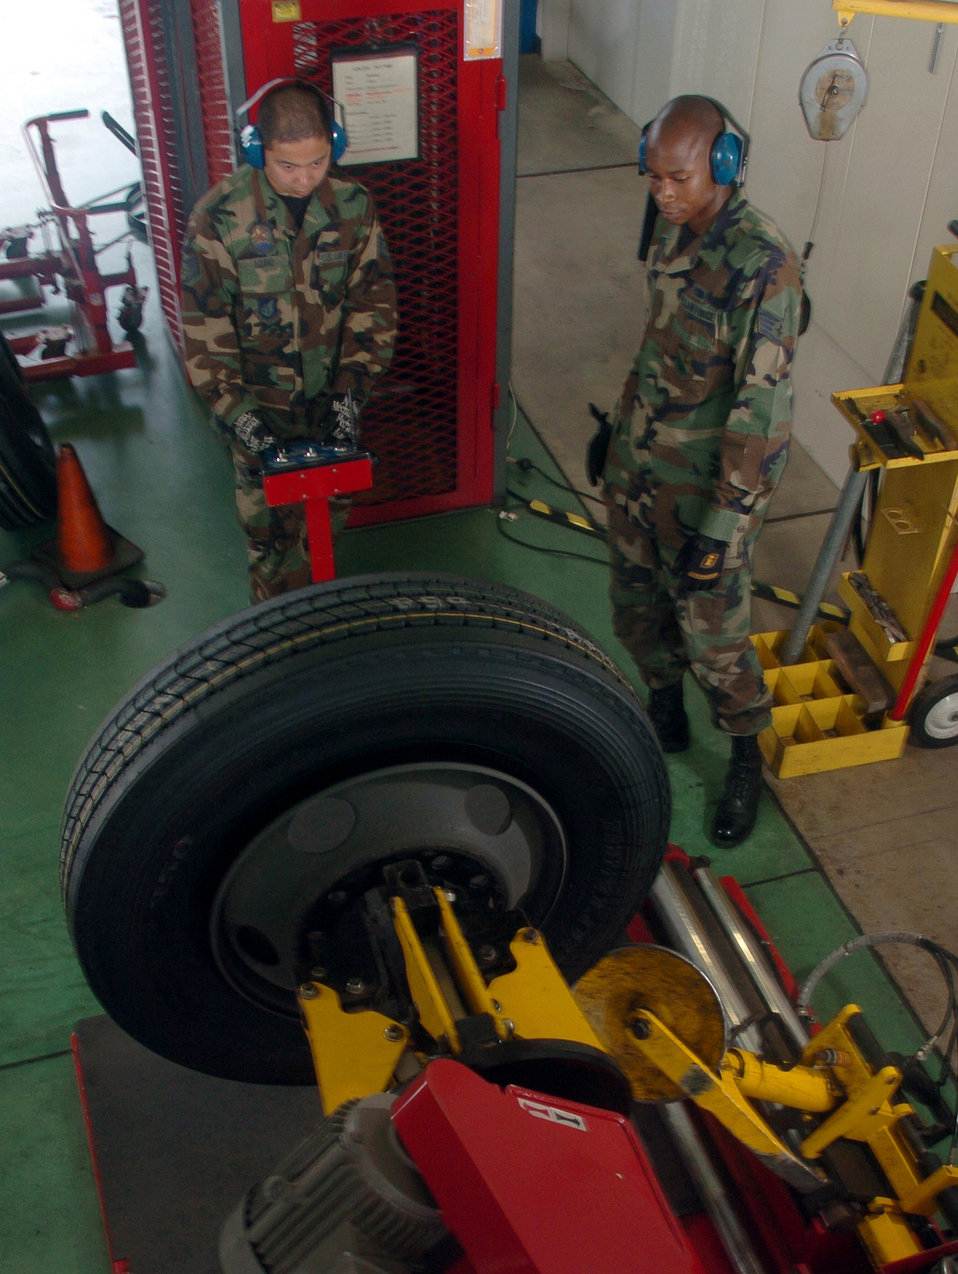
Wheelin’ and dealin’

YOKOTA AIR BASE, Japan (AFPN) -- Staff Sgts. Mike Aquino (left) and Tygi Jones use a tire machine here. Both Airmen are mechanics with the 374th Logistics Readiness Squadron's vehicle maintenance element. The element replaces and rebuilds parts and components for more than 1,100 vehicles here. Some of these parts include vehicle engines, transmissions, suspensions and steering and brake systems.